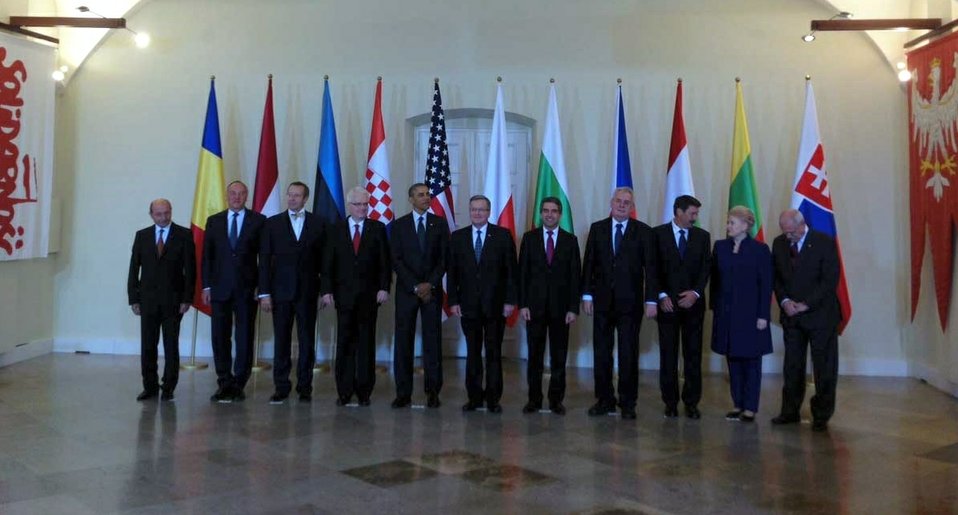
President Obama Joins Central and Eastern European Leaders for a Photo

U.S. President Barack Obama joins Central and Eastern European Leaders for a photo at the Koniecpolski Palace in Warsaw, Poland, on June 3, 2014. [U.S. Mission to Poland photo by Jakub Szymczuk]